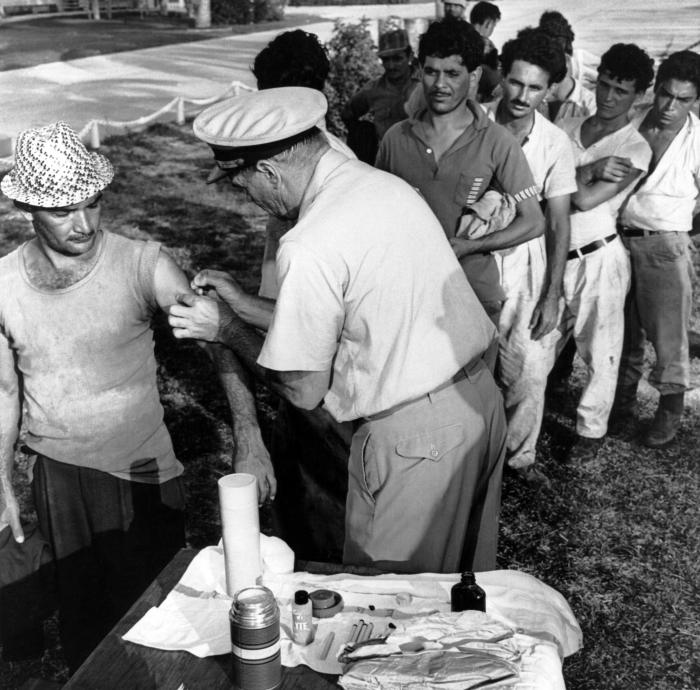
This 1965 photograph shows a group of Cuban men being immunized by a Public Health Service representative upon their arrival in Miami, Florida.